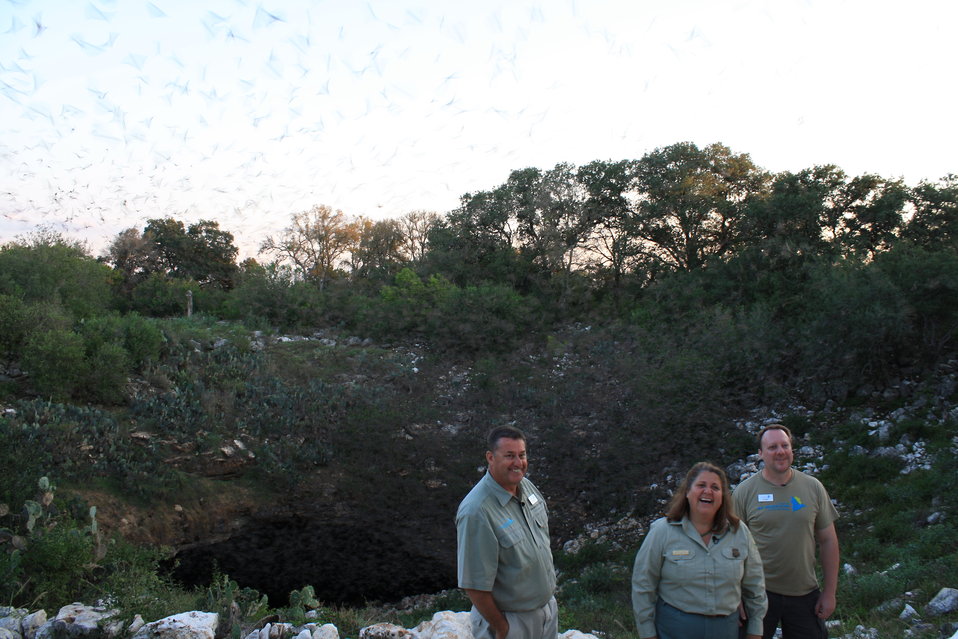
BCI and US Forest Service staff during broadcast

BCI staff Fran Huntchins and James Eggers and US Forest Service staff Sandy Frost during BatsLIVE broadcast